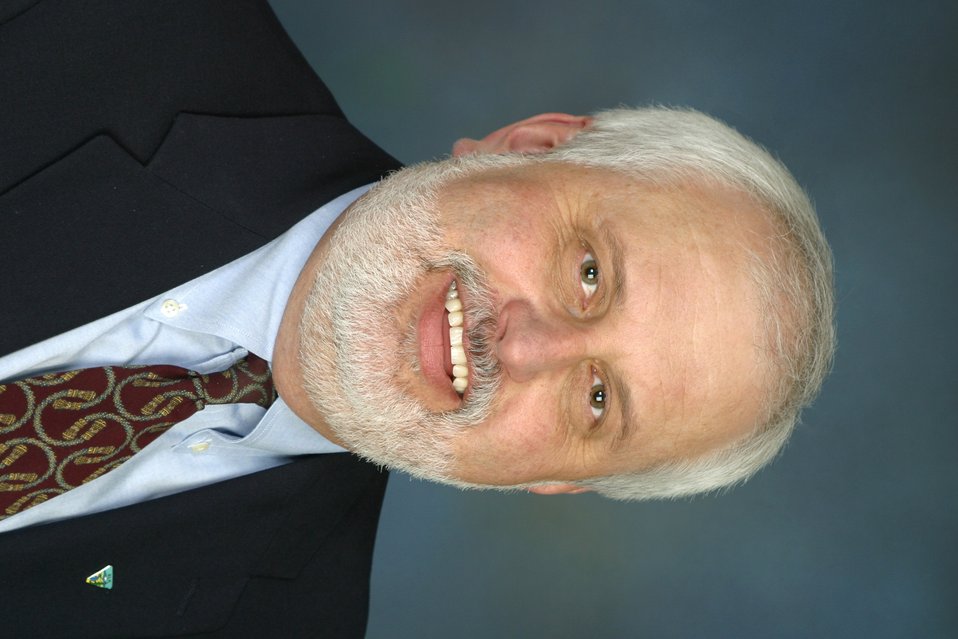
Chuck Wassinger Associate State Director